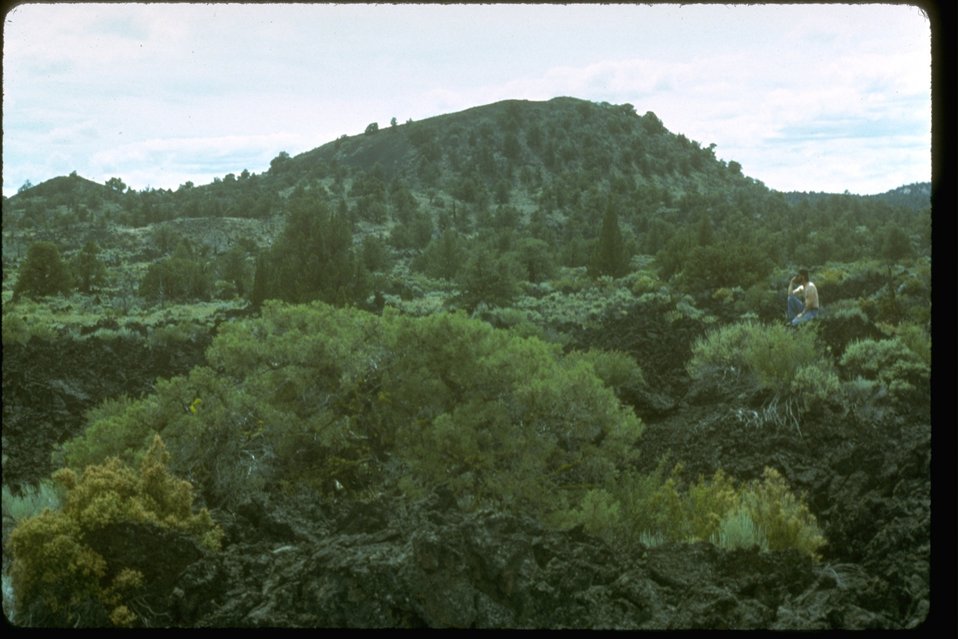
View to the Cinder Cone from the east side at the Four Craters Lava Bed Wilderness Study Area. OR 1-22